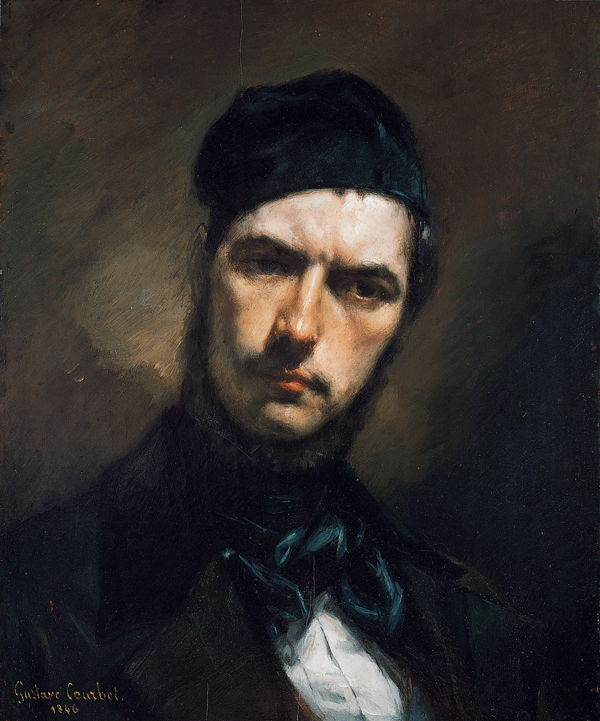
'Portrait of H. J. van Wisselingh', oil on panel painting by Gustave Courbet